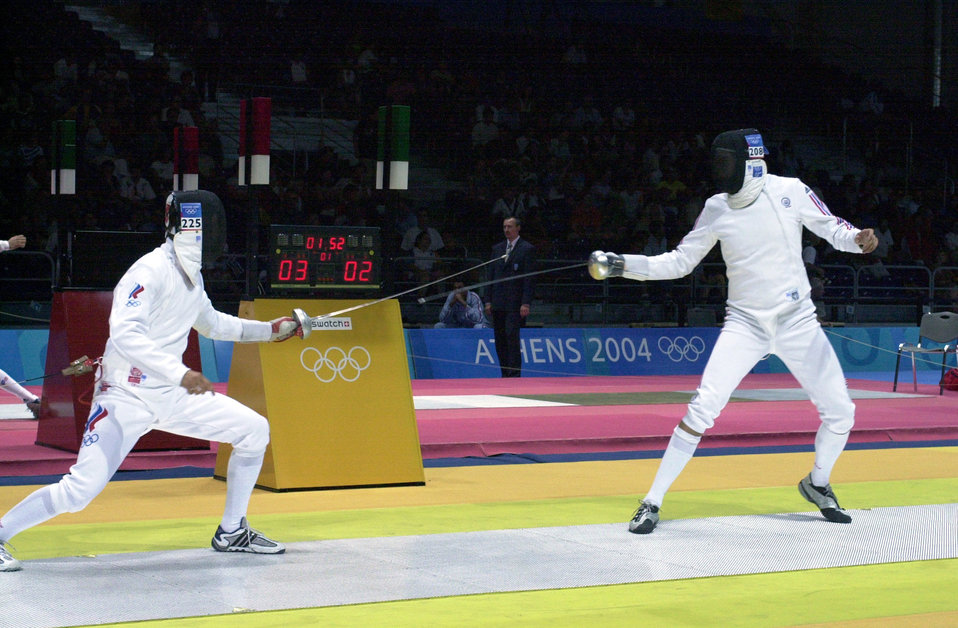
De-fenced

ATHENS, Greece -- Second Lt. Seth Kelsey (right) duels with Russian Ivan Tourchine in the second round of the Olympic Men's Individual Epee event at Helliniko Fencing Hall near here Aug. 17. Lieutenant Kelsey lost 15-11 and did not advance to the third round. He is a member of the Air Force world-class athlete program.